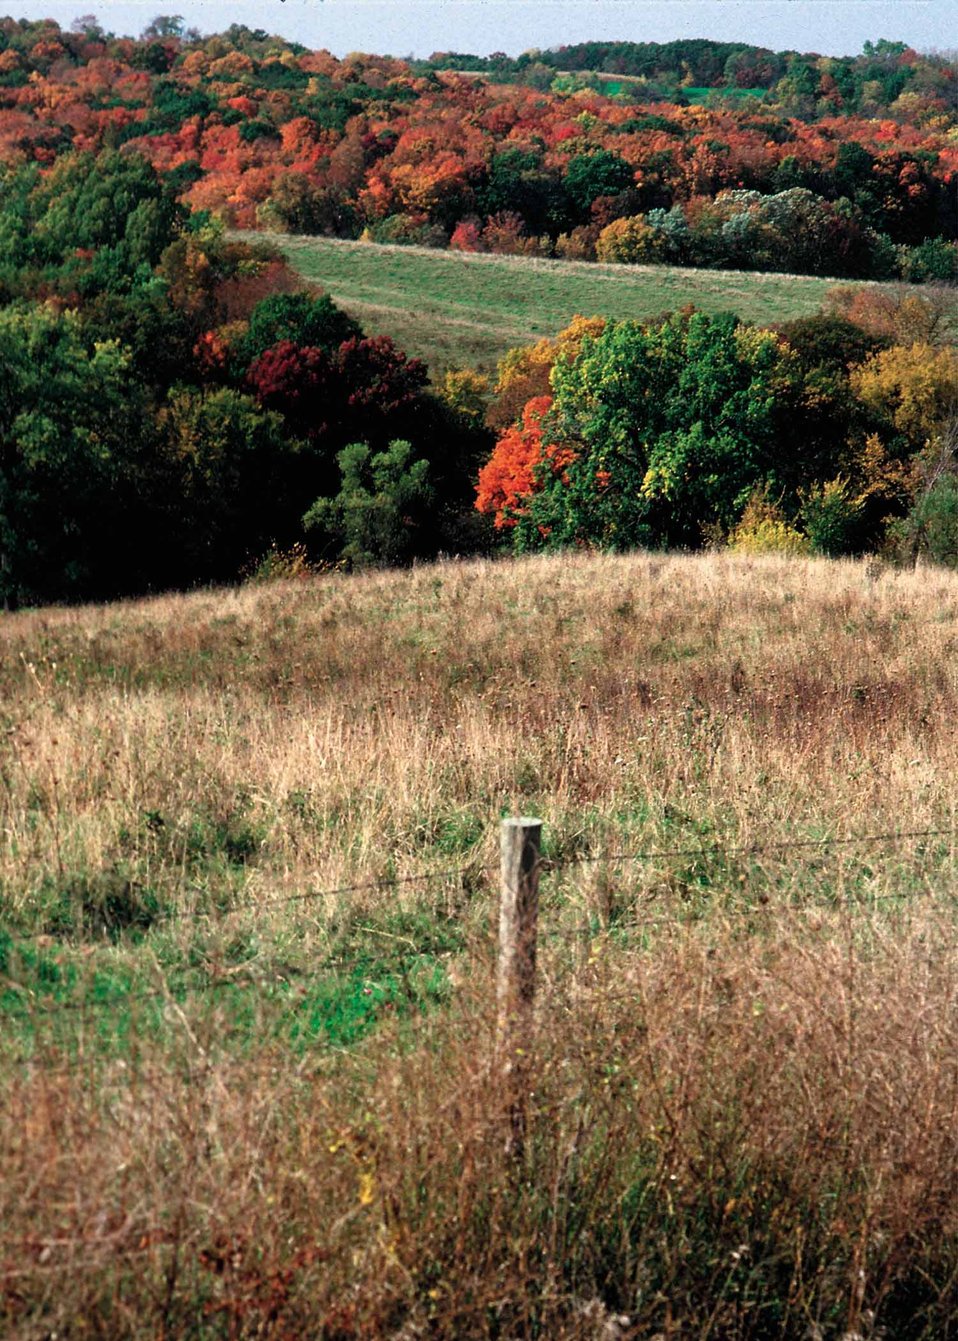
Forests and grasslands in northeast Iowa.